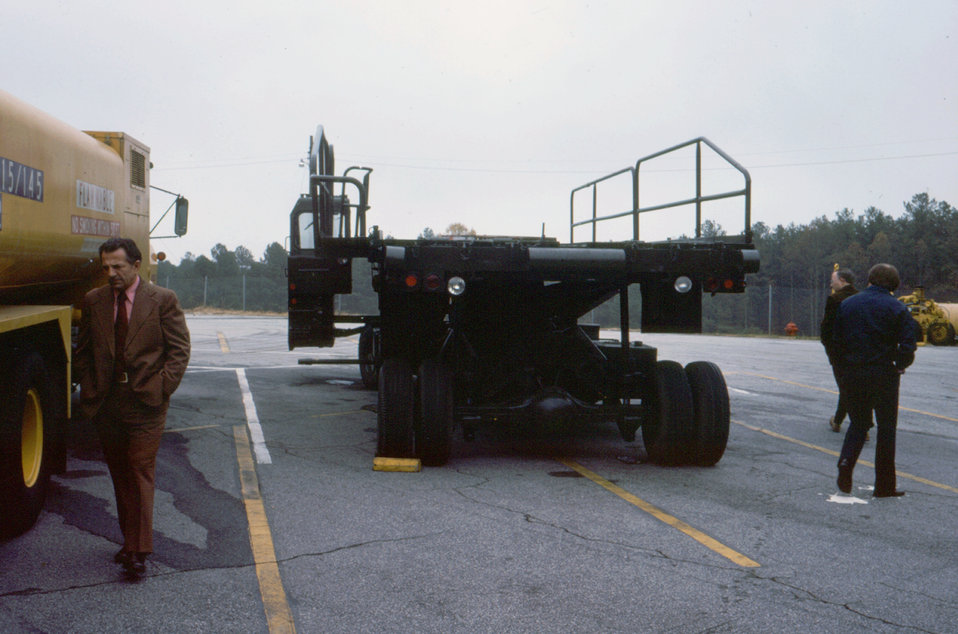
This 1976 photograph showed the loading device, which was used to move the mobile quarantine facility (MQF), on and off of its transport aircraft.